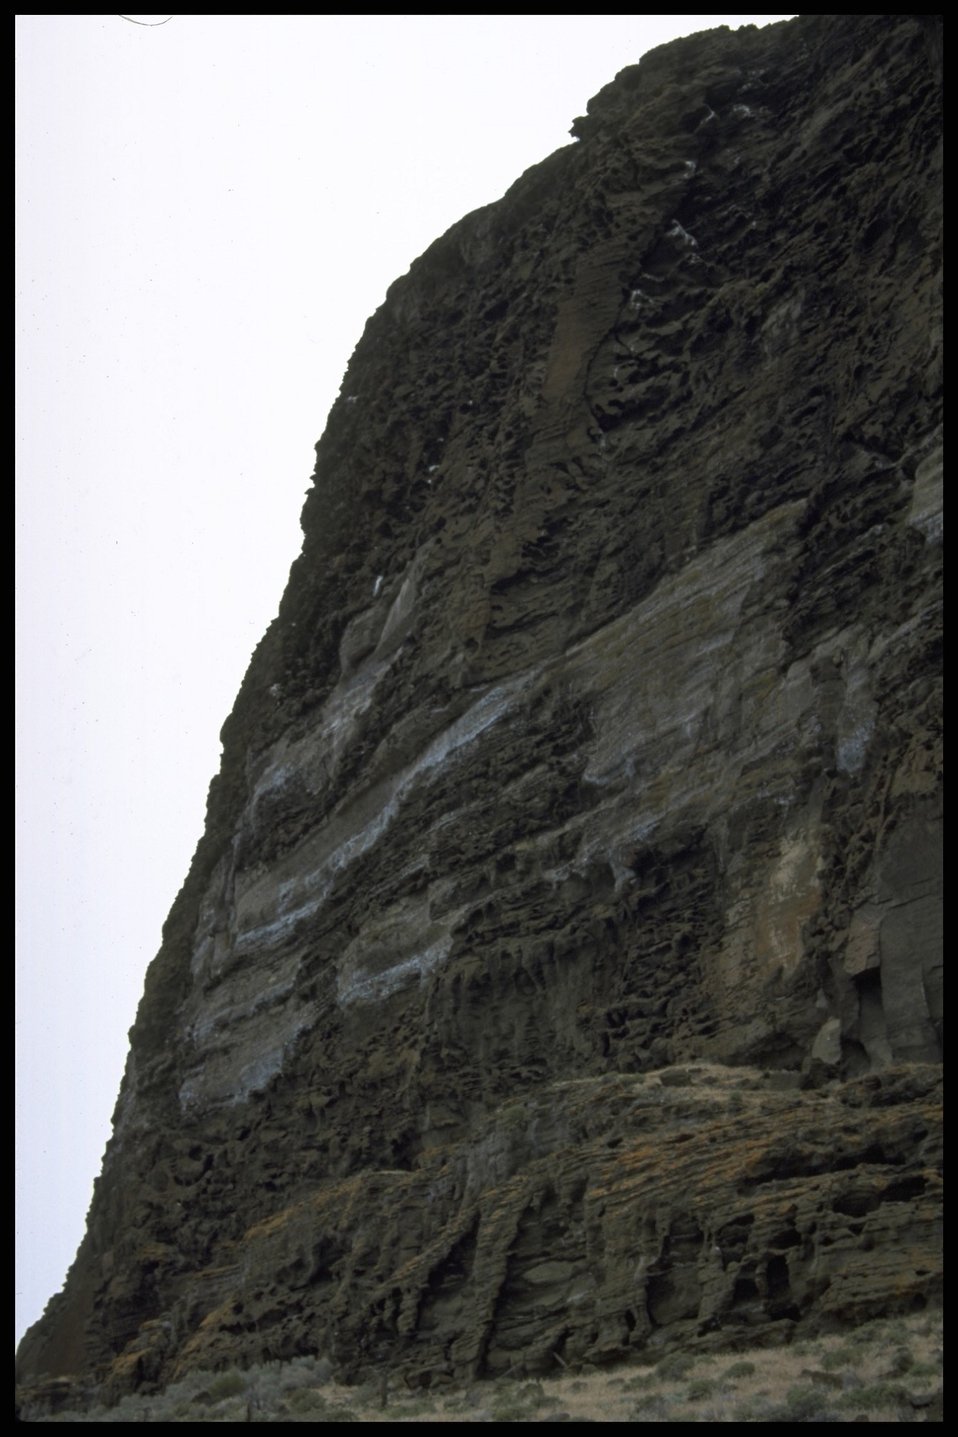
Scenic view, Ft. Rock, Lakeview District.